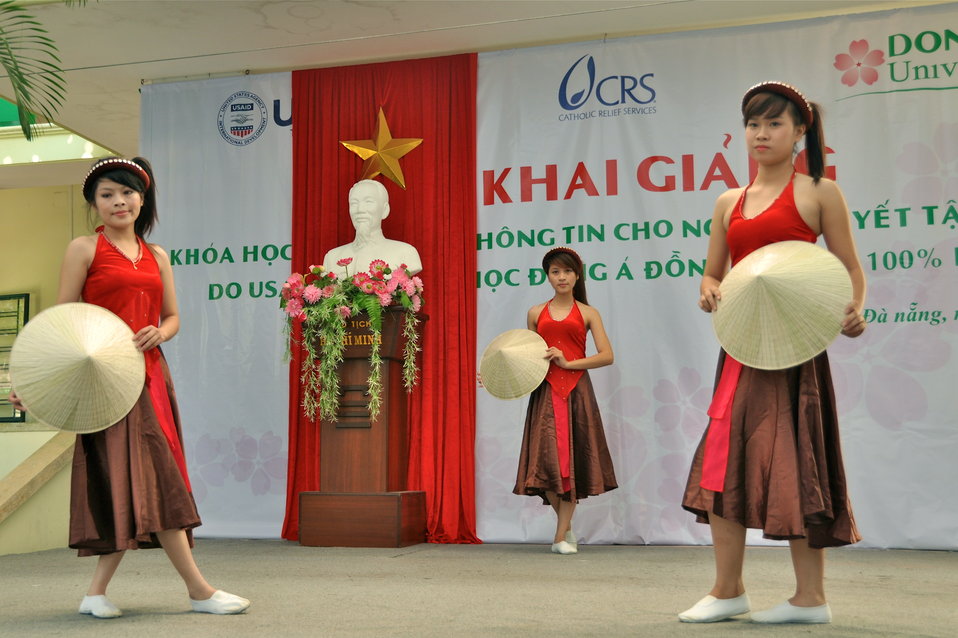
Dong A University joins with USAID and CRS to mark the International Day of Persons with Disabilities in Danang

Photo: @USAIDVietnam
December 3, 2012